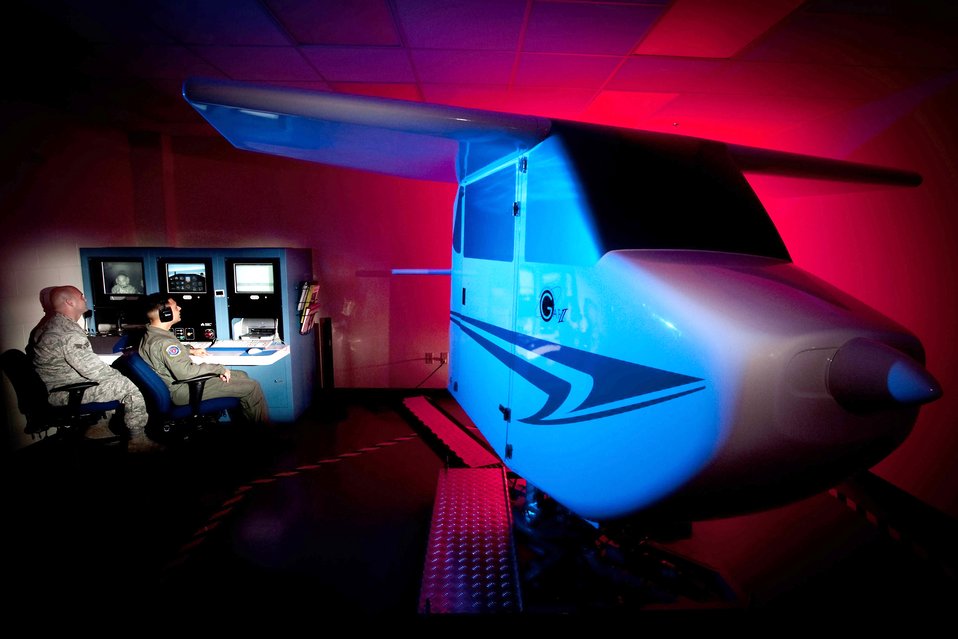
Disoriented orientation

Senior Airman Jason Boyd (left) and Staff Sgt. Vikas Kumar monitor a trainee during night instrument training in the General Aviation Trainer II used to familiarize aviators with the effects of spatial disorientation and the importance of trusting their instruments and not how they feel Sept. 30, 2009, at Randolph Air Force Base, Texas. Airman Boyd and Sergeant Kumar are aerospace physiology technicians with the 12th Medical Group.